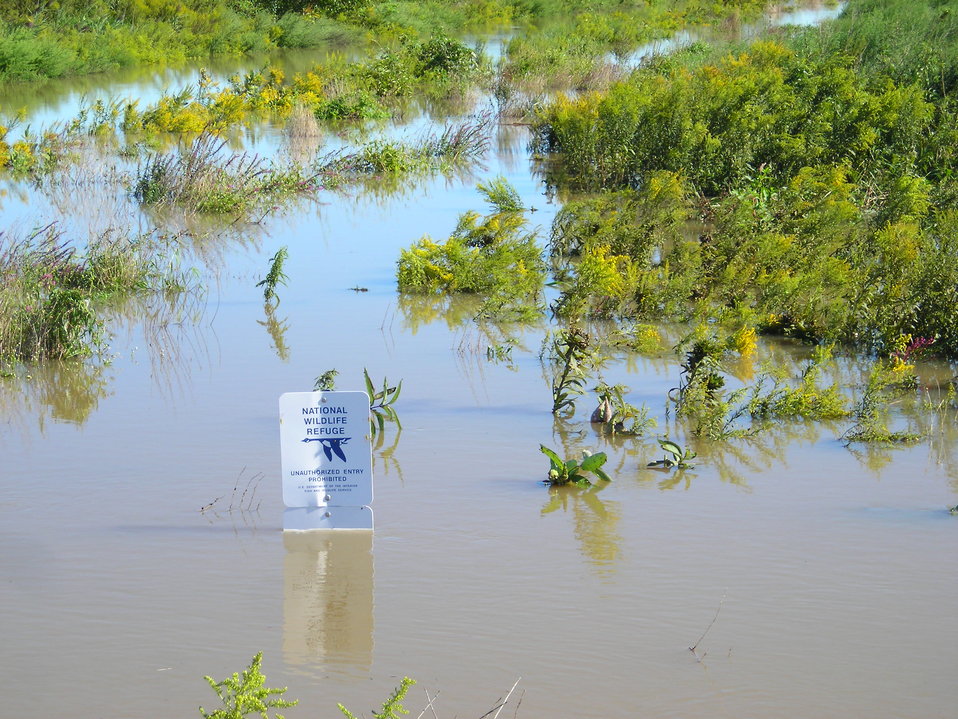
Flooding at WallKill River Refuge

Wallkill River National Wildlife Refuge, Sussex, N.J. Post-Irene flooded Liberty Loop impoundments and trail. Meagan Racey/USFWS